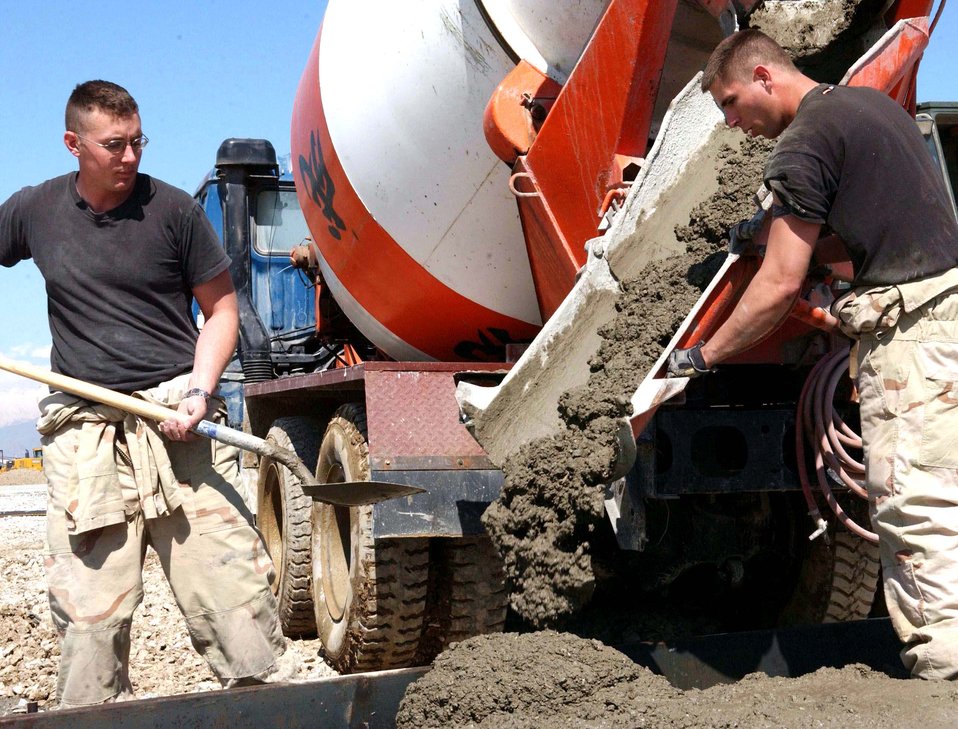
Civil engineers prepare to 'close the gaps' on Bagram's flightline

BAGRAM AIR BASE, Afghanistan -- Airman 1st Class Joshua Olson (left) and Senior Airman Mark Schwaiger pour concrete into one of 28 precast runway replacement slabs destined for the 9,800-foot runway here. Both Airmen are assigned to the 455th Expeditionary Civil Engineer Squadron.